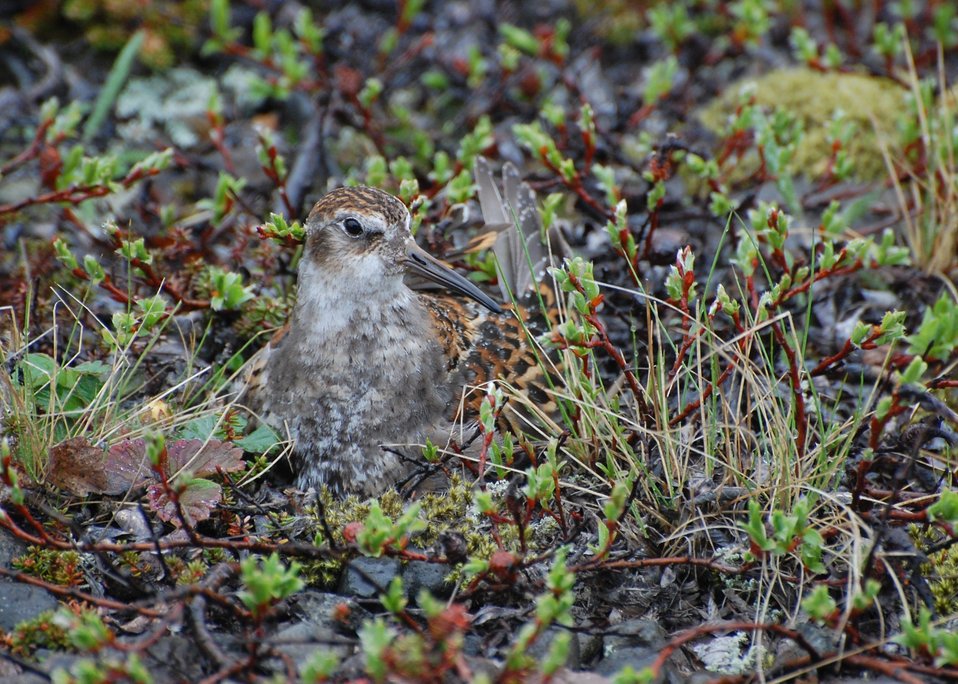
Rock Sandpiper on nest

Izembek National Wildlife Refuge
Photo by Kristine Sowl,
USFWS, Public Domain